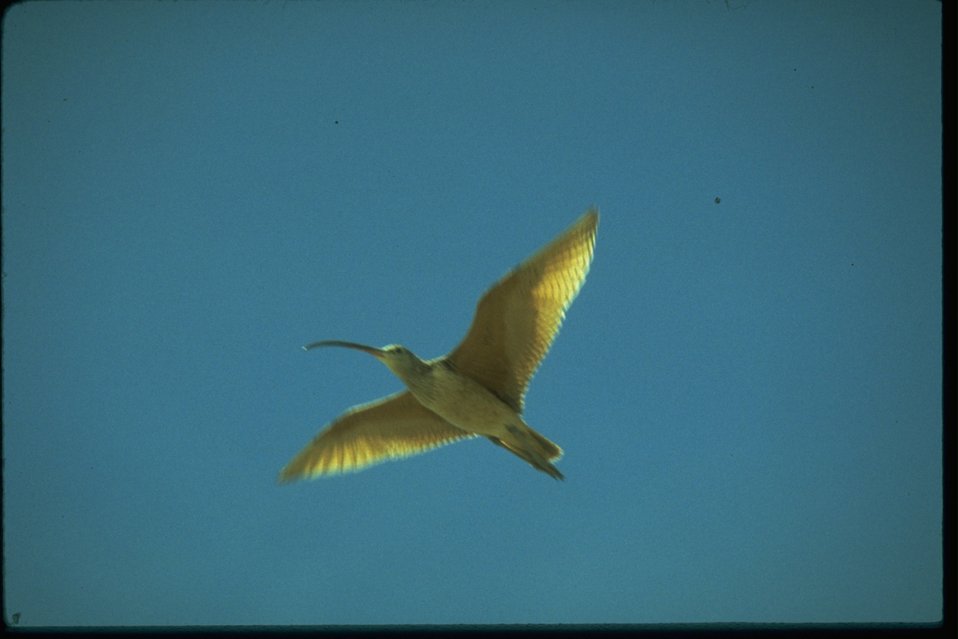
A long-billed Curlew soaring in the sky.